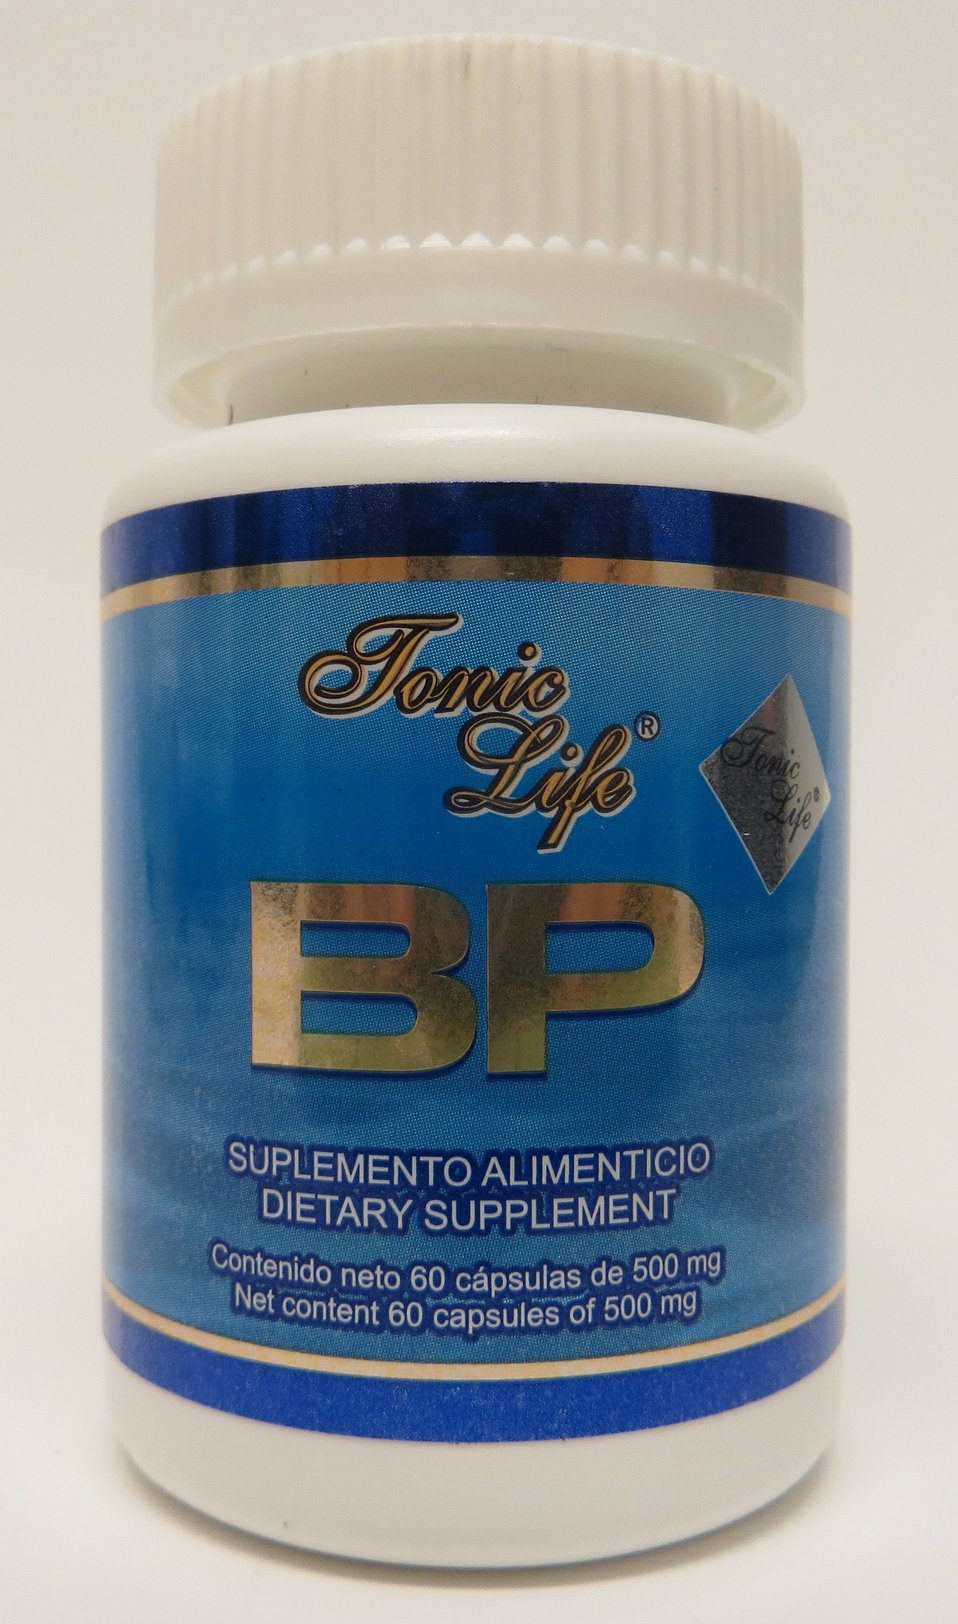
Tonic Life BP

January 28, 2014 - The FDA is advising consumers not to purchase or use Tonic Life BP, a product promoted and sold as a dietary supplement for weight loss. The product was found to contain undeclared phenolphthalein.